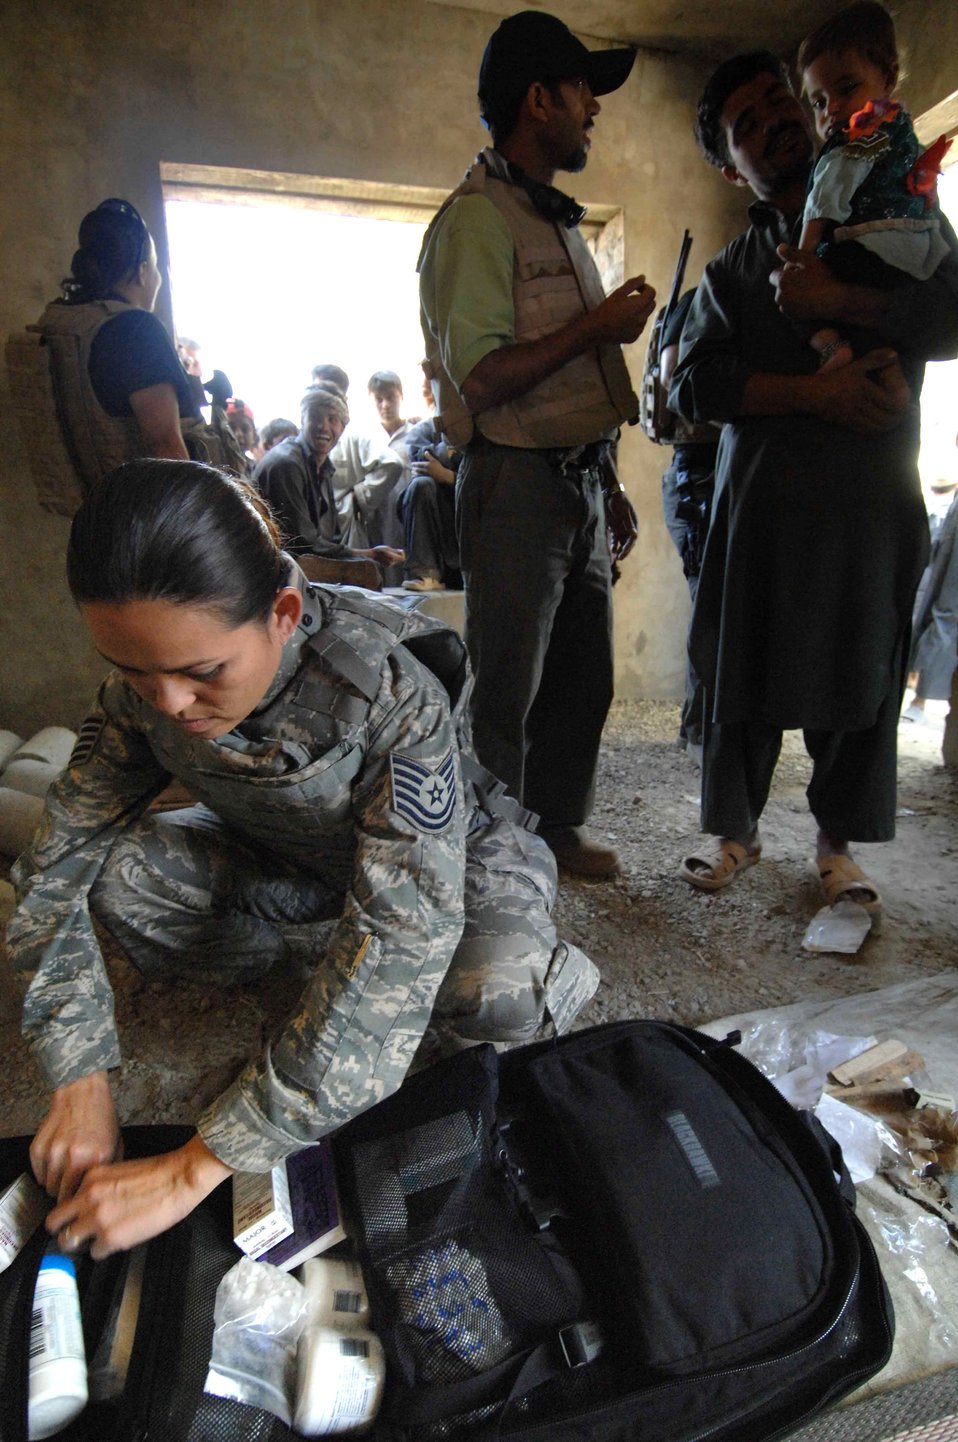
Medical mission provides care in Afghanistan

Tech. Sgt. Joy Flumerfelt checks her supplies Oct. 4 during a medical civil action project near Bagram Air Base, Afghanistan. Sergeant Flumerfelt is a medical technician with the 455th Air Expeditionary Wing.